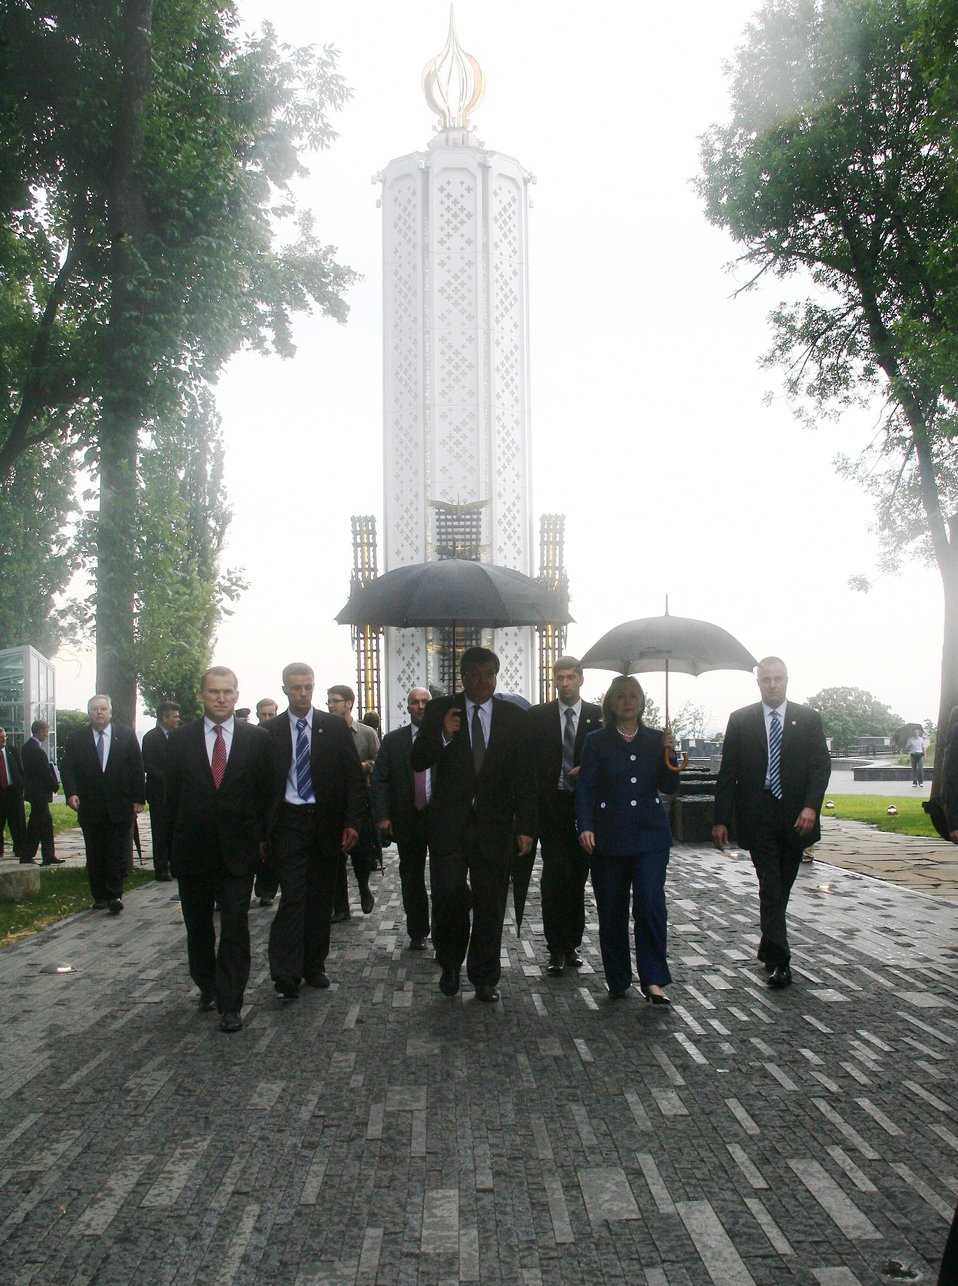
Secretary Clinton and Ukrainian Foreign Minister Visit Holodomor Memorial

U.S. Secretary of State Hillary Rodham Clinton and Ukrainian Foreign Minister Kostyantyn Gryshchenko visit the Holodomor Memorial in Kyiv, Ukraine, on July 2, 2010.